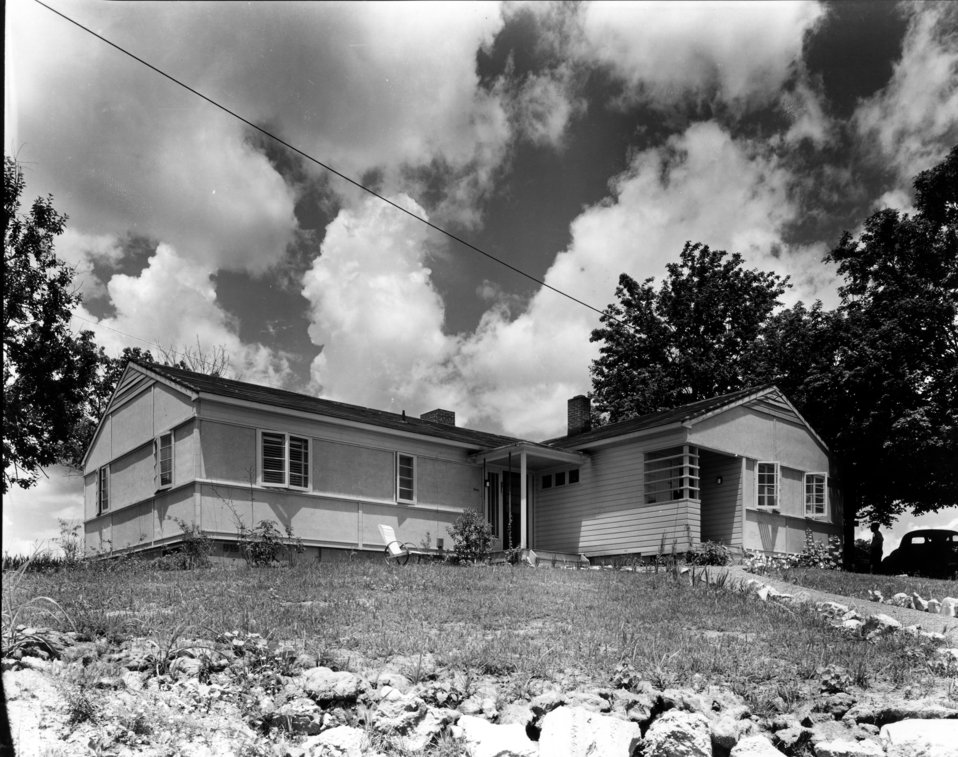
Housing at Oak Ridge